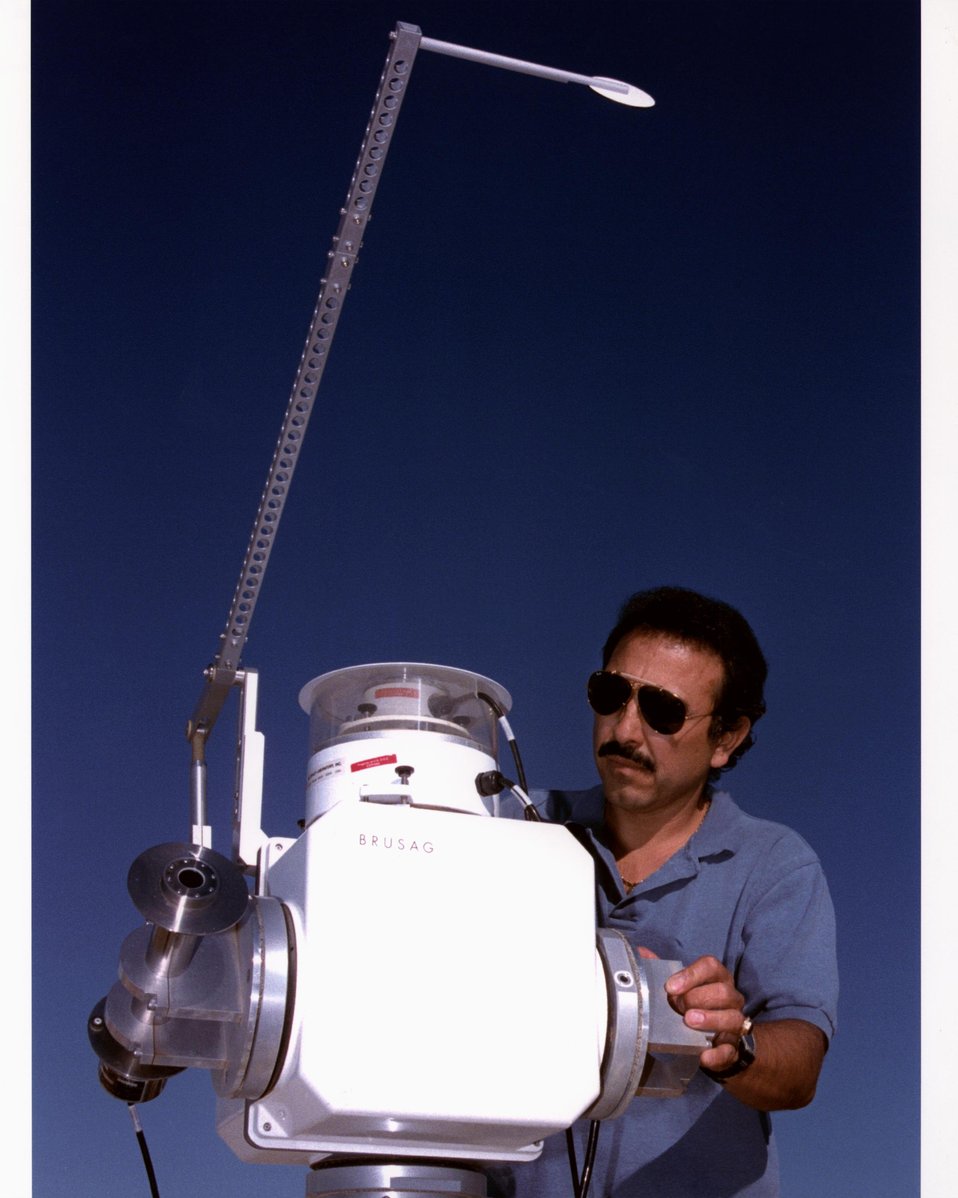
SANDIA TECHNICIAN EXAMINES A SOLAR TRACKER THAT FOLLOWS THE SUN.

THE TRACKER SHOWN IS PART OF THE SANDIA'S ATMOSPHERIC RADIATION AND CLOUD STATION (ARCS) OUTDOOR SENSOR ARRAY. THIS IS PART OF DOE'S ATMOSPHERIC RADIATION MEASUREMENT (ARM) PROGRAM, WHICH IS SEEKING TO FIND HOW SUNLIGHT AND INFRARED RADIATION INTERACT WITH CLOUDS AND, IN PARTICULAR, WHETHER VARYING LEVELS OF ATMOSPHERIC MOISTURE COULD INFLUENCE EARTH'S RADIOACTIVE ENERGY TO THE POINT OF CAUSING LONG TERM GLOBAL CLIMATE CHANGES.